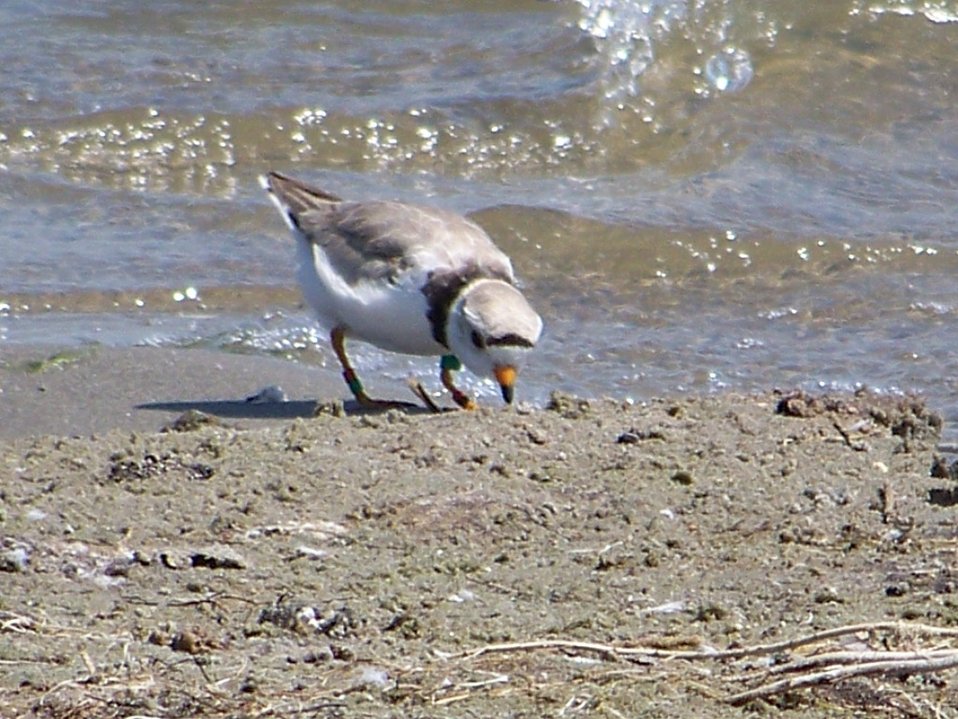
Piping plover on shore

The piping plover (Charadrius melodus) is a small, sandy-colored bird with orange legs, a black band across its forehead and a black ring around the base of its neck. The piping plover is designated as threatened under the Endangered Species Act. Plover numbers have declined due to habitat loss and disturbance, which lead to poor reproductive success.